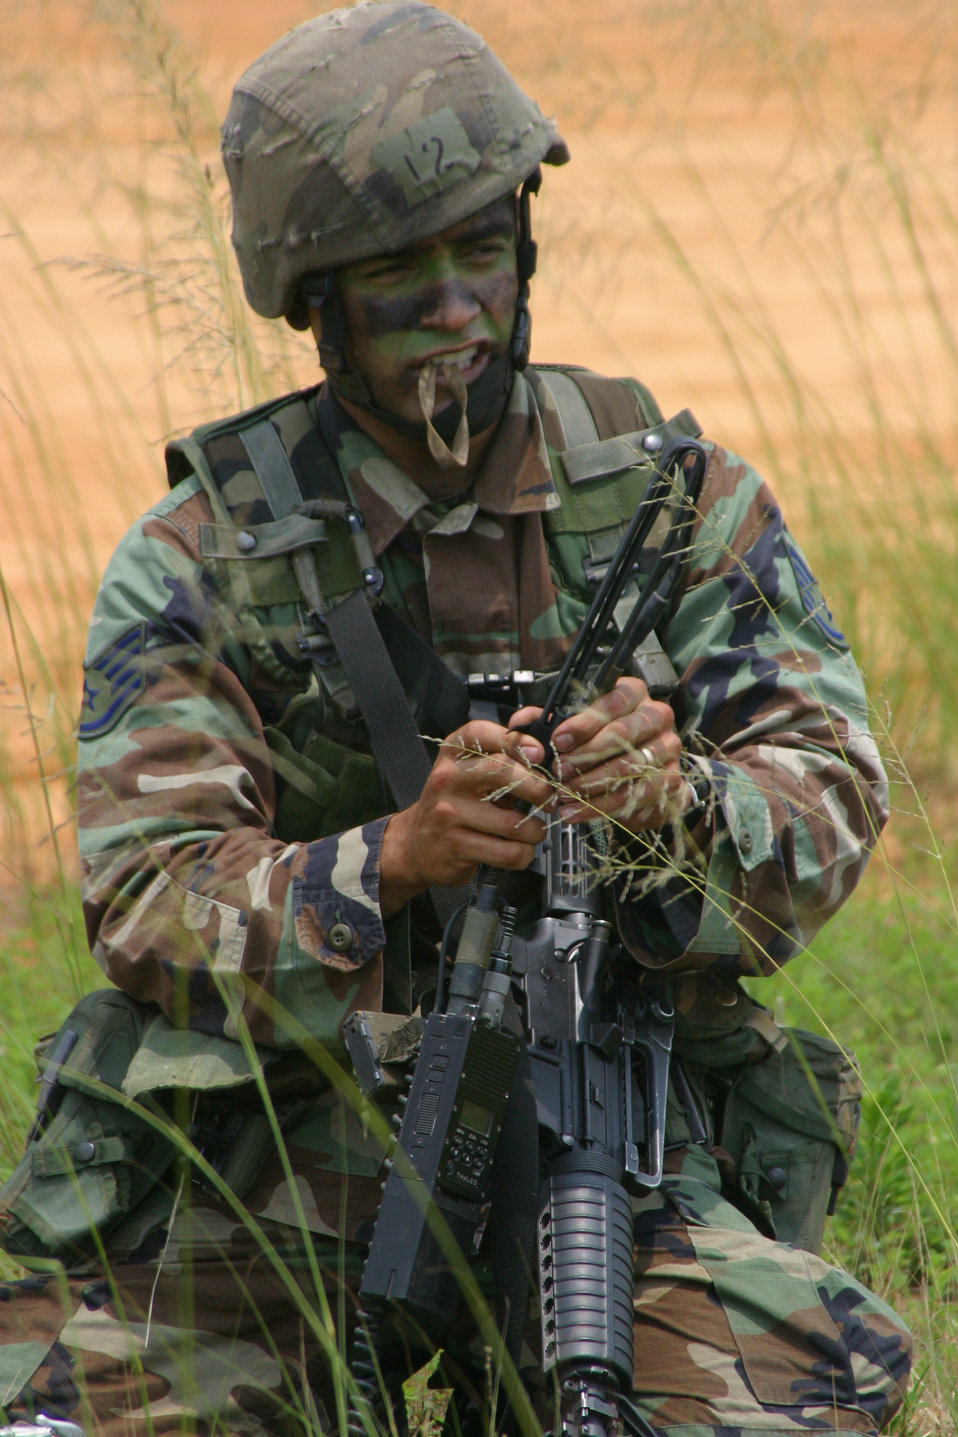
Airmen train to wear scarlet beret

CAMP MACKALL, N.C. -- A Combat Control School student assembles his equipment after parachuting onto a landing zone here as part of a field exercise. All students must meet rigorous standards to graduate the course and earn the right to wear the scarlet beret.